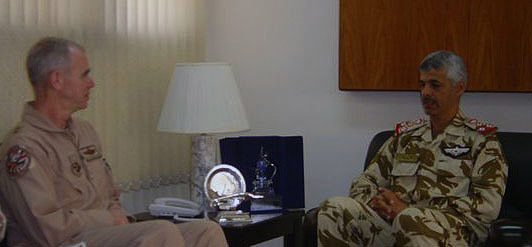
U.S. Central Command, Bahrain air power officials discuss relations

Maj. Gen. William Holland, deputy Combined Forces Air Component commander, U.S. Central Command, meets with Brig. Gen. Hamad, commander of the Royal
Bahraini Air Force this week at the Royal Bahraini Air Force headquarters at Shaikh Isa Air Base in Bahrain. The two air power officials discussed the military relations of their respective nations and air forces. General Holland and Lt. Gen. Gary North, the Combined Forces Air Component commander and commander of the U.S. Central Command Air Forces, travel frequently to foster military air power relations within the Central Command area of responsibility, to support the resolve of nations like Bahrain to defend their own air space and to effectively integrate air power employment throughout Southwest Asia.